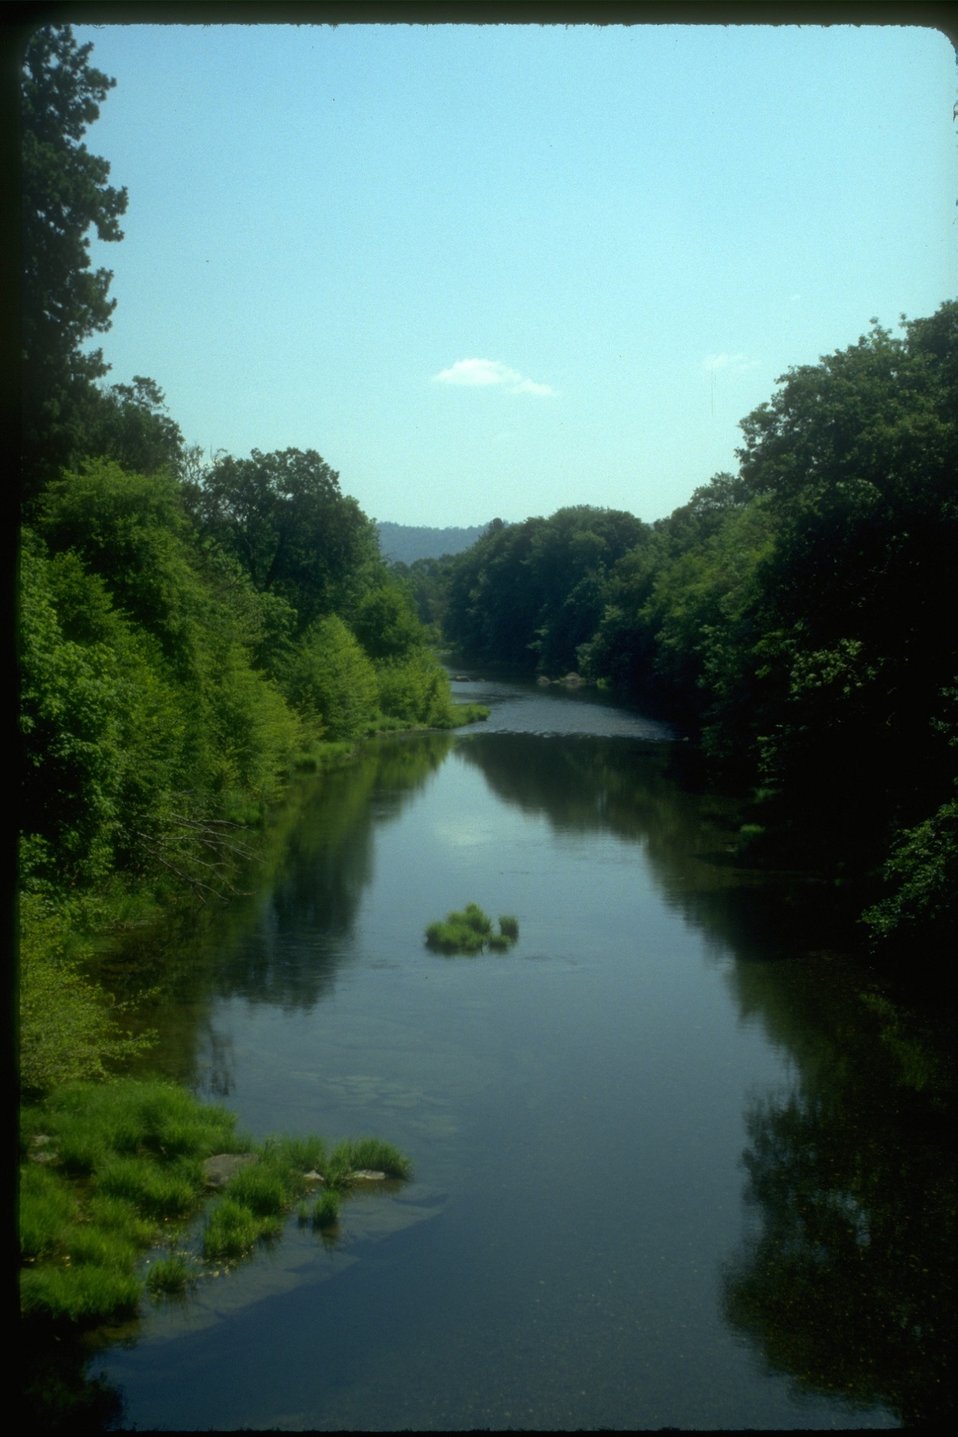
Along Cow Creek Back Country Byway below Council Creek with view of riparian area.